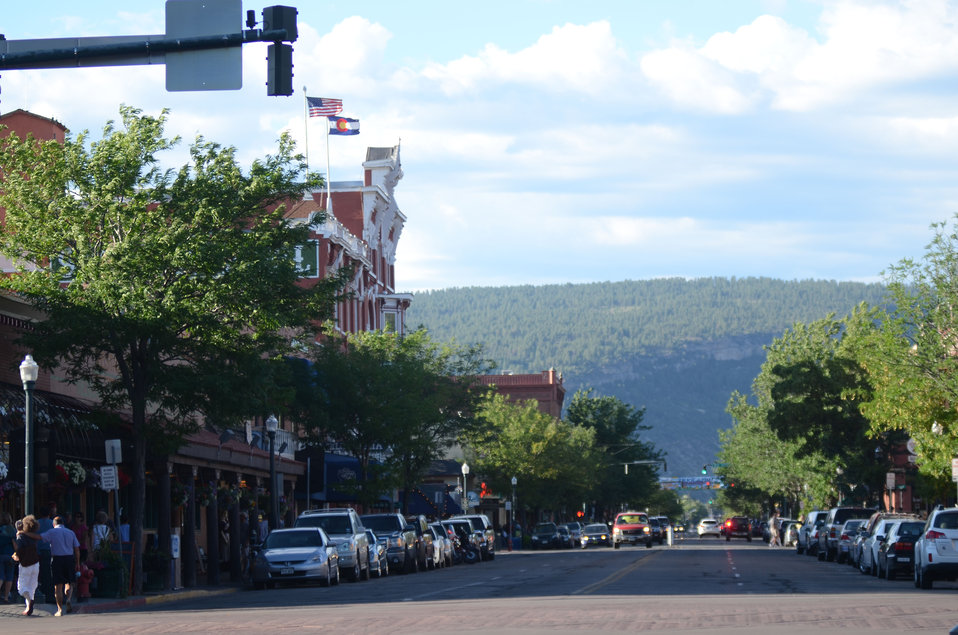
Downtown Durango, Colorado is in a historic mining area; now a destination location featuring the Durango & Silverton Narrow Gauge Railroad depot and other economic providers. Natural resources surround the area. It is home to more than 17,000 people.